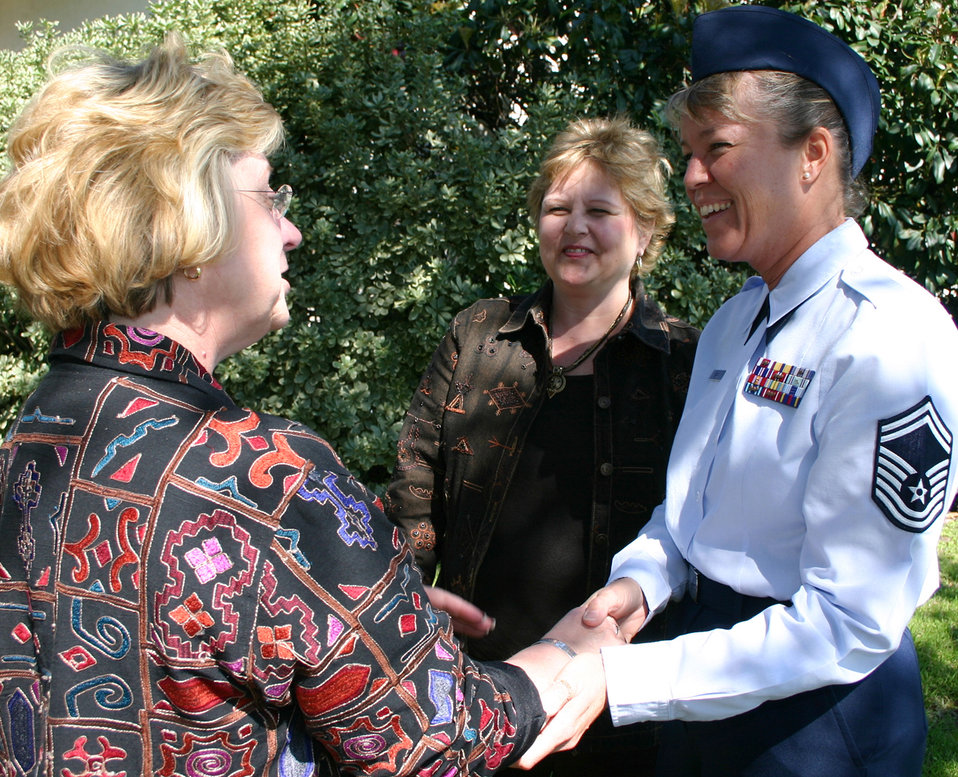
Bracelet draws Airman, family together

RANDOLPH AIR FORCE BASE, Texas -- Senior Master Sgt. Cheryl Wells greets Debra Morris (left) and her sister, Julia Barta. The sisters became good friends with Sergeant Wells during a Department of Defense family member update in Houston two years ago because they wore the same